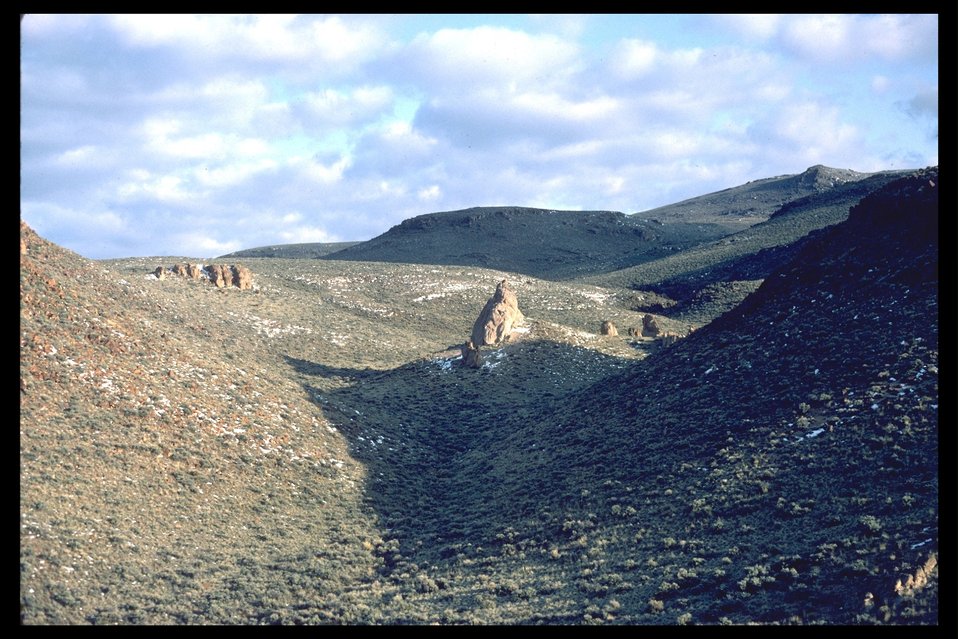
Scenic shot of Rincon WSA. (2-82)